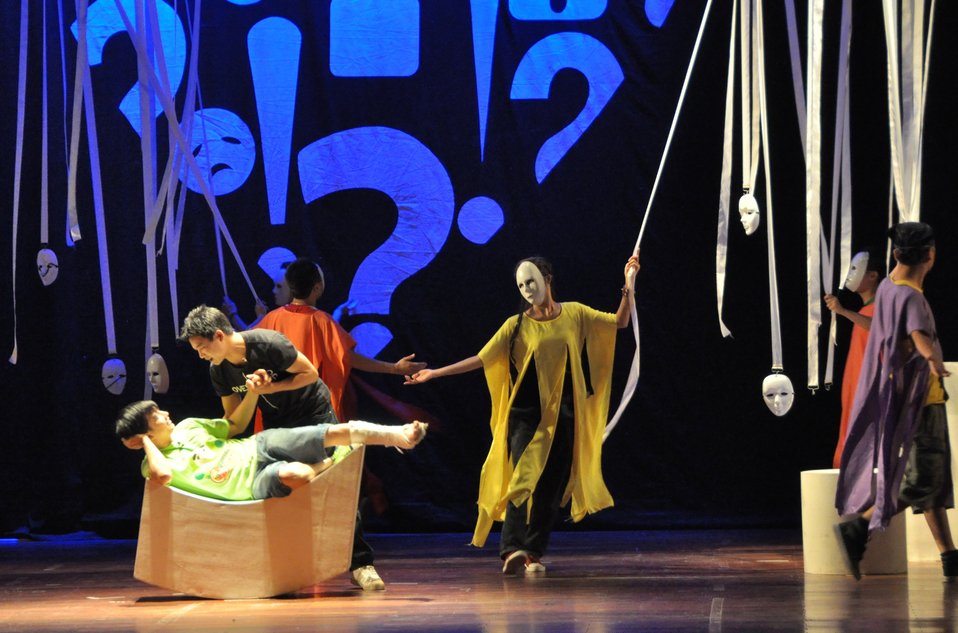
PEPFAR Musical Questions and Exclamations

Hanoi, May 17, 2013